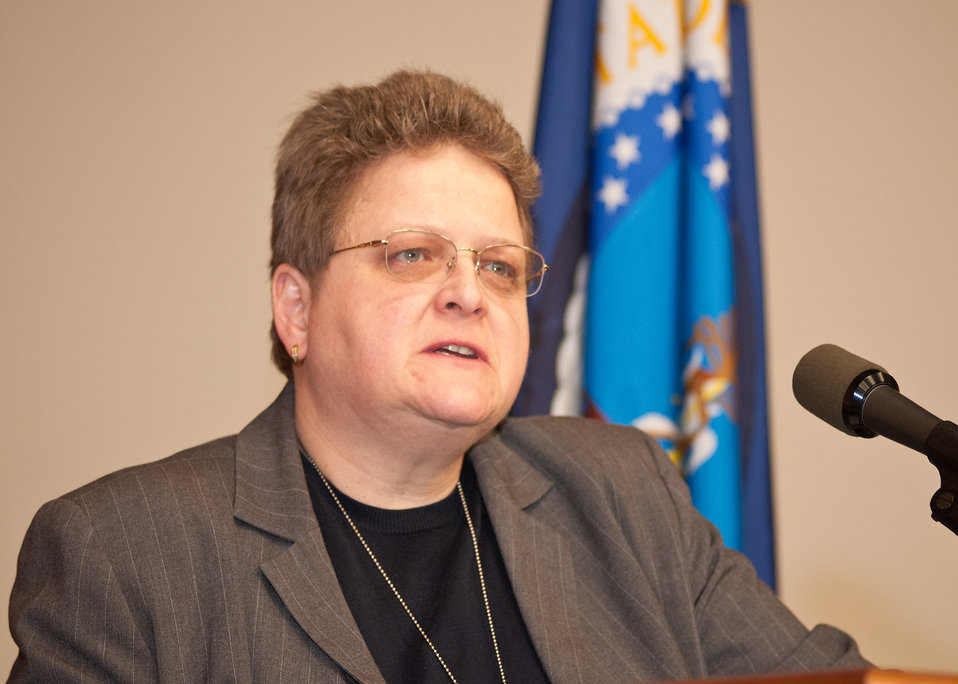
Cheryl Cook, Deputy Under Secretary, Rural Development offers her congratulations to retiring employees and thanks to all employees for their public service and hard work during the Rural Development Celebration of Service held at the United States Department of Agriculture in Washington, DC, on Wednesday, November 16, 2011.